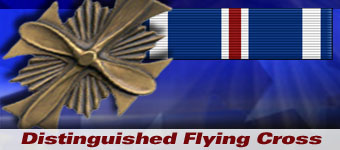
Distinguished Flying Cross history spotlight graphic